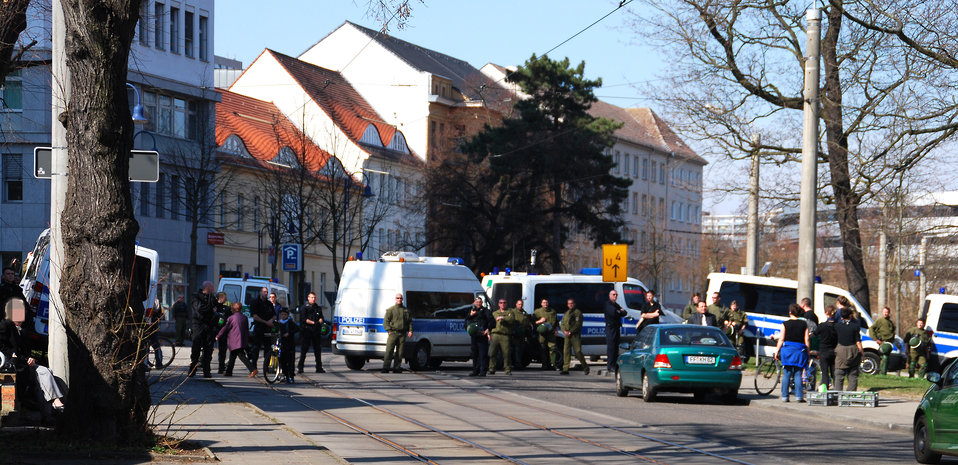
Proteste gegen den Nazi-Aufmarsch am 24.3.2012 in Frankfurt (Oder)